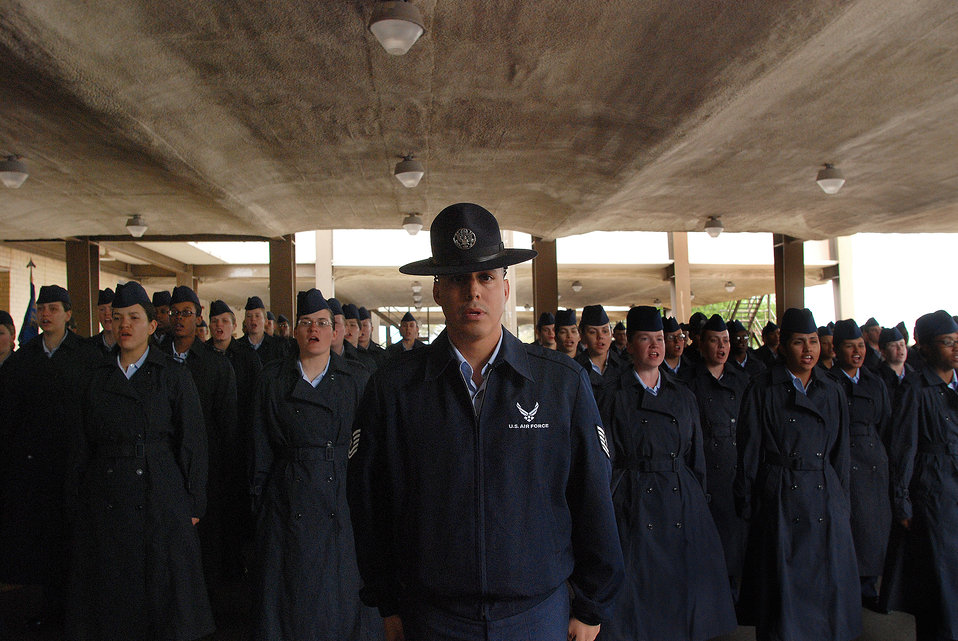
Walk softly and carry a big hat

Technical Sgt. Ricardo Chavez recites the Airman's Creed in formation with basic trainees from the 321st Training Squadron in preparation for graduation March 11 at Lackland Air Force Base, Texas. Sergeant Chavez is a 433rd Airlift Wing Reserve military training instructor.